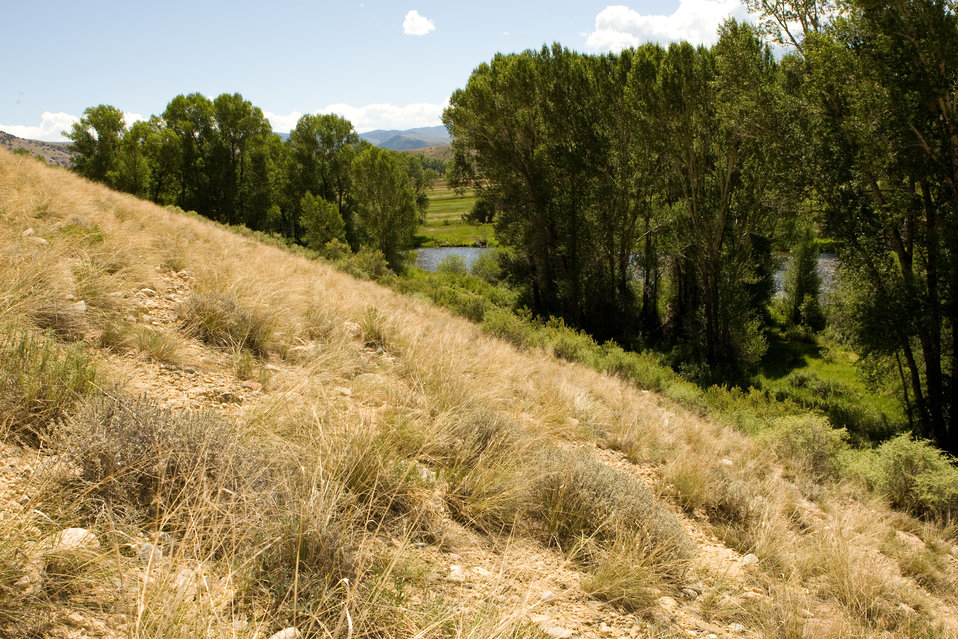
Colorado Rare Plant Conservation Initiative

The Colorado Rare Plant Conservation Initiative (RPCI) is a partnership of 23 statewide and regional agencies, private organizations, and academic institutions working to conserve 121 rare plants in Colorado. As part of these efforts the group developed the Colorado Rare Plant Conservation Strategy, developed Best Management Practices to reduce energy development impacts, addressed climate change, and developed focused strategies for the conservation of individual species at eight priority landscapes. The group has also worked to coordinate volunteer efforts for plant conservation across the state.